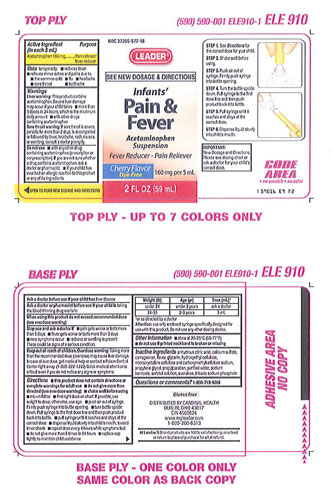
Recalled - Acetaminophen infant suspension liquid

November 1, 2013 – Product Recall – Perrigo Initiates Nationwide Voluntary Product Recall of Acetaminophen Infant Suspension Liquid, 160 Mg/5 Ml, Due to a Potential Defect with the Co-packaged Oral Syringe.